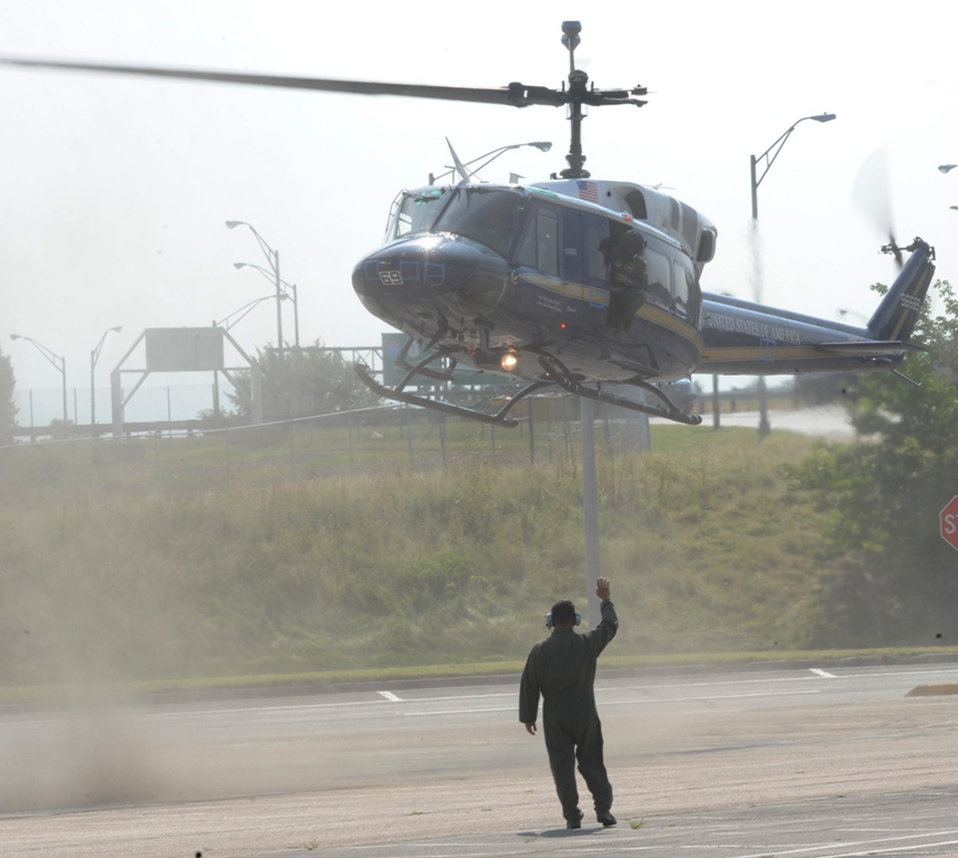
District of Washington officials provide fast, safe evacuation for biological attack exercise

Capt. Daniel Ramirez flags a clean helicopter into the